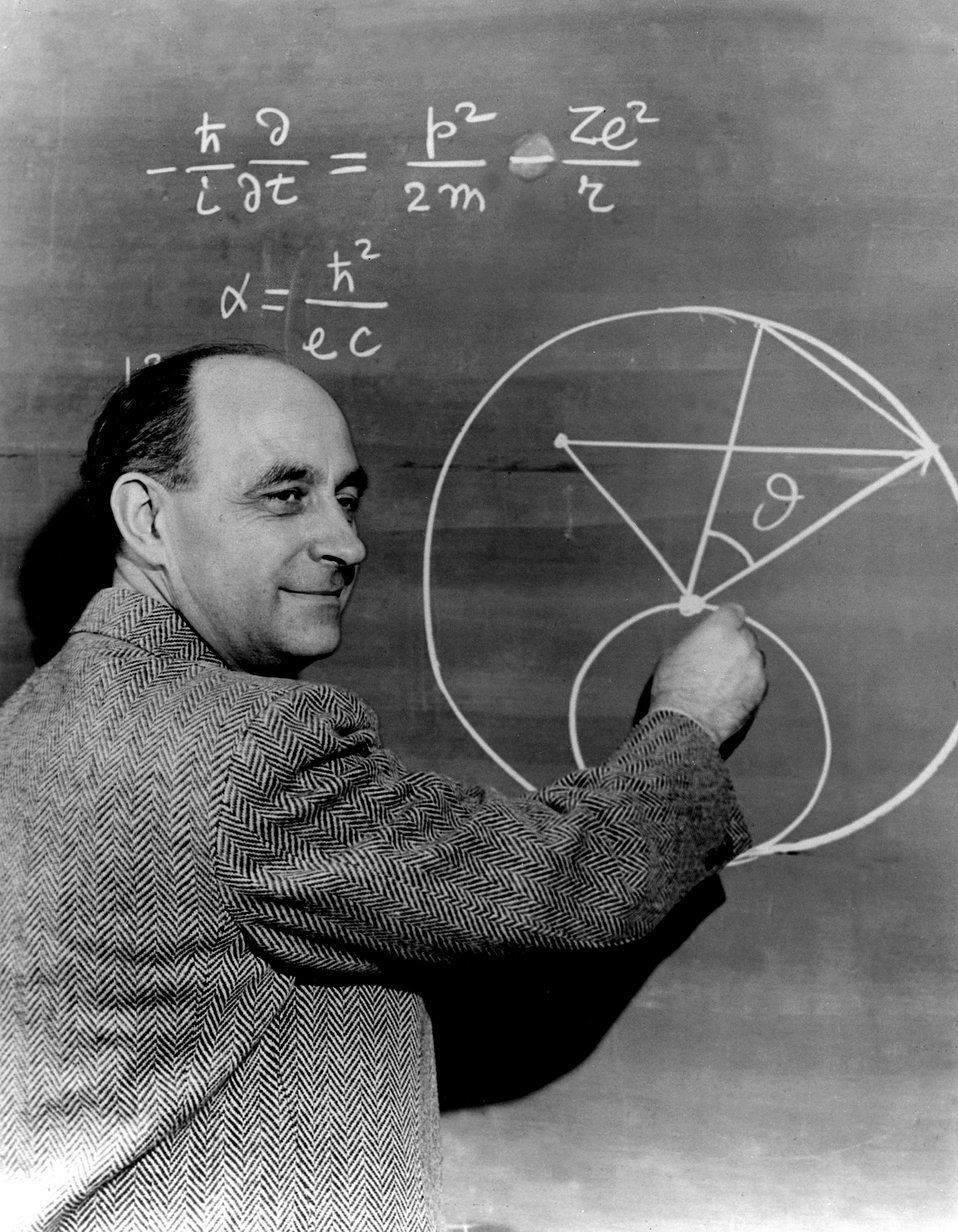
Enrico Fermi at the blackboard.